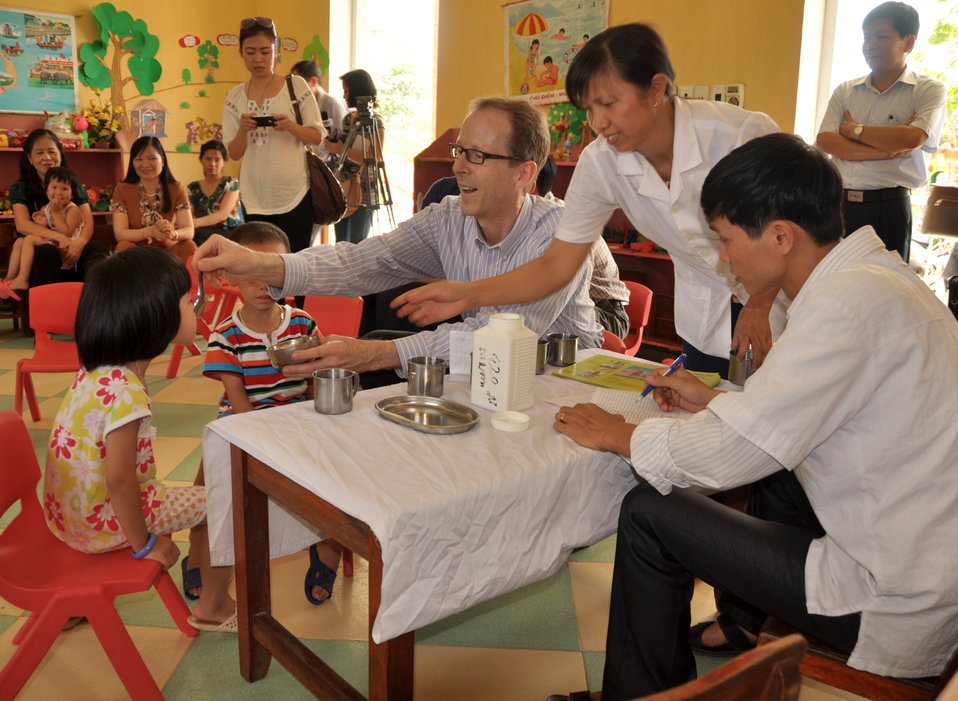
USAID Delivers Deworming Medication to Kindergartners in Nam Dinh Province

USAID Mission Director Joakim Parker gives a dose of deworming medicine to kindergarten children in Nam Dinh Province.